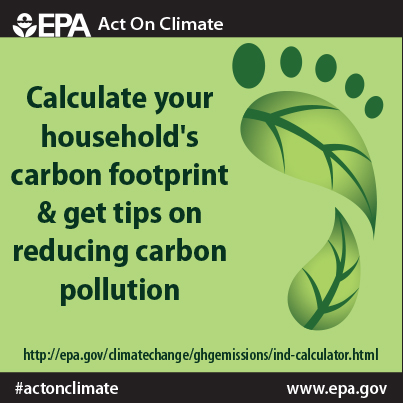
Calculate Your Household's Carbon Footprint

Use this link to find out your carbon footprint and #ActOnClimate.